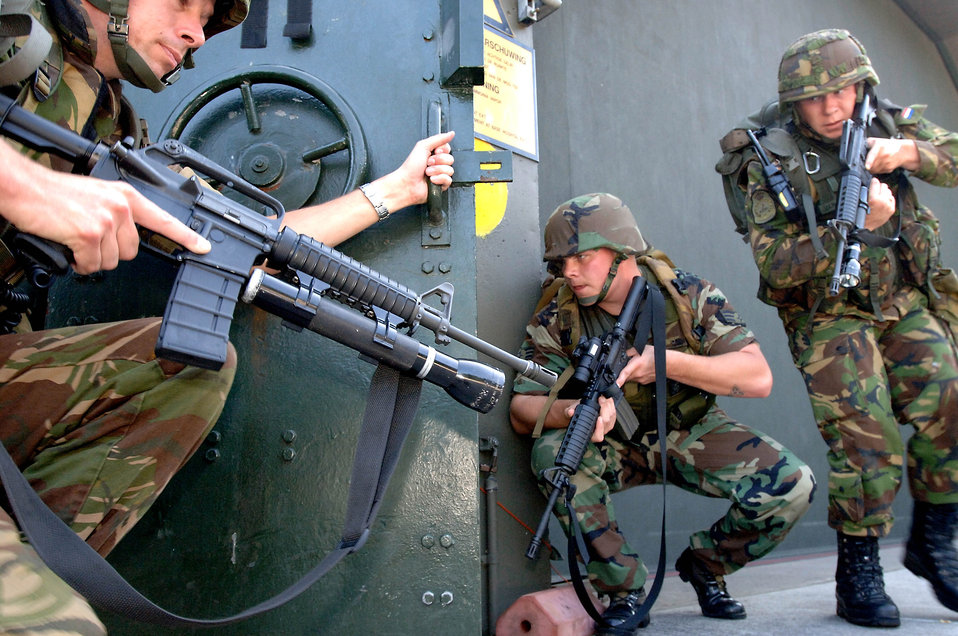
Munitions troops help give Dutch fighters a strike punch

VOLKEL AIR BASE, Netherlands -- (Left to right) Dutch air force Cpl. Wilco Laar, Senior Airman Stephan Herrington, and Dutch air force Soldier 1st Class Melvin Rinsma enter a hangar to ensure the security of a Dutch F-16 Fighting Falcon during a security exercise. The Dutch airmen are assigned to the 1st Fighter Wing, and Airman Herrington is assigned to the 703rd Munitions Maintenance Squadron here.